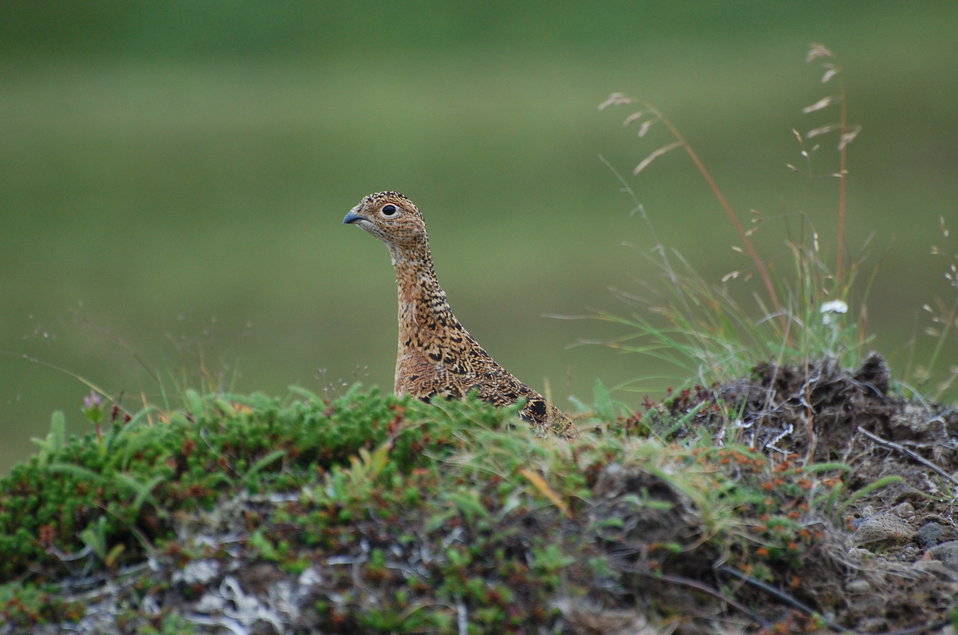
Willow Ptarmigan female

Izembek National Wildlife Refuge